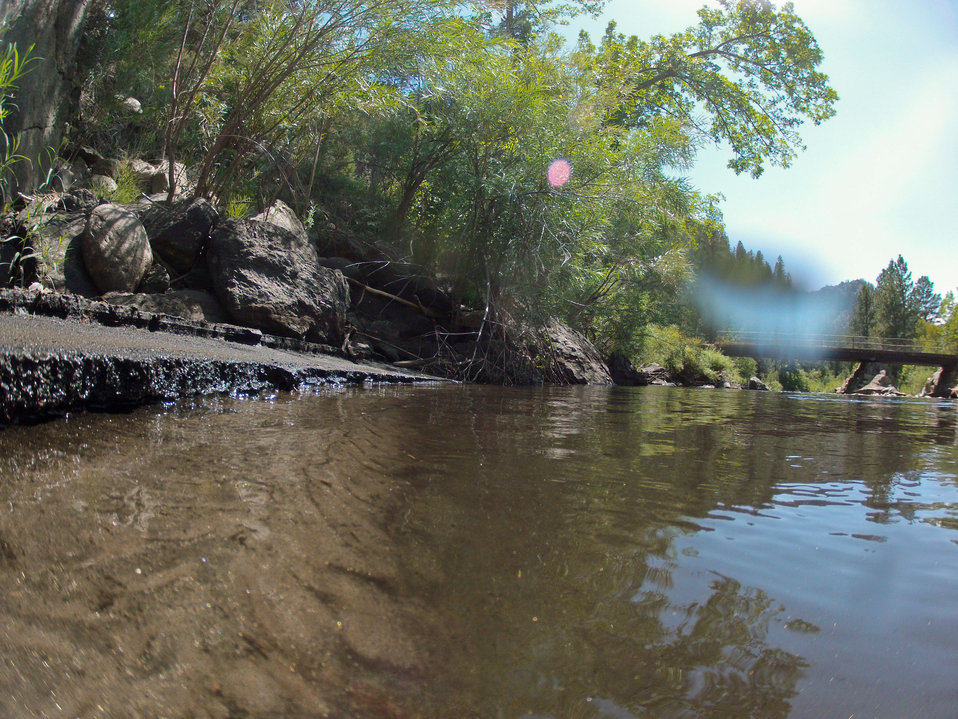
A confluence of two tributaries, the Cache la Poudre and the North Fork of the Cache la Poudre, near Seaman Reservoir, 60 miles north of Denver, Colorado on Friday, July 20, 2012, have been transformed from clear mountain waters to a nearly black water, heavily laden with ash, silt, and burnt debris that was recently washed down mountainsides by thunderstorms. The mountainsides were burned by the Hewlett Gulch Fire (May 14, 2012), in the Poudre Canyon area. At its peak more than 400 firefighters were battling fires pushed by 50 mph winds. When the last embers were cooled, more than 12-square miles lay blacked at a cost of approximately 3.2 million dollars. The aerial distribution of straw has successfully kept nearby Seaman Reservoir clean for the drinking water of the City of Greeley. Forest Service lands receive straw, while private and other lands receive a seed mix and straw to promote ground cover plant growth on ash-covered lands. In total, 1,800 tons of straw will be applied during the 14-day operation. One quarter of the cost was paid by the City of Greeley and the U.S. Department of Agriculture funded the remainder.